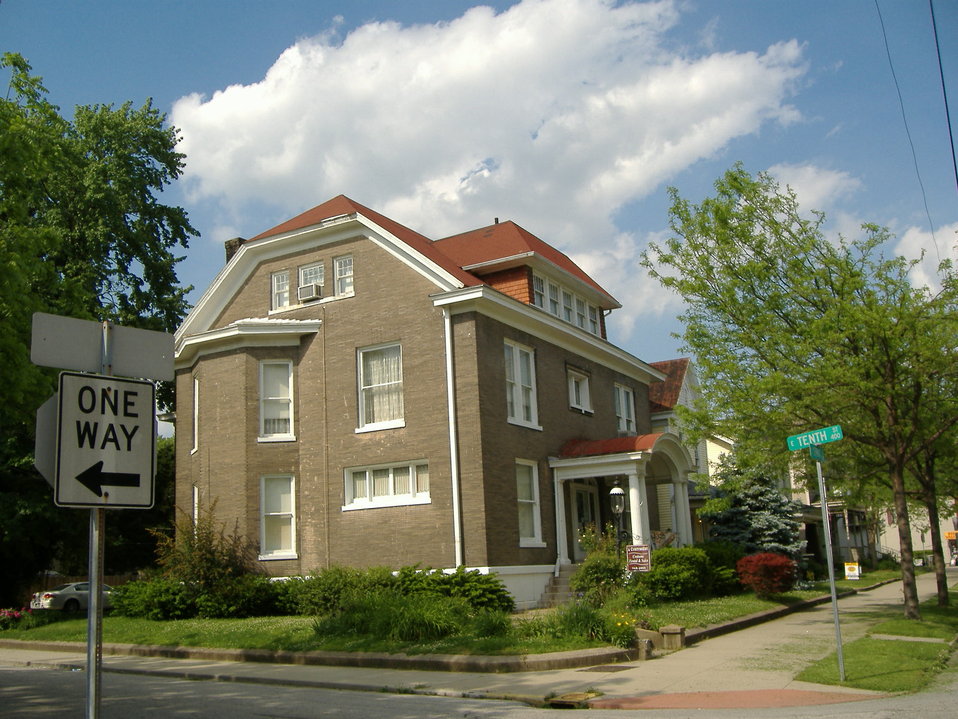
A c.1910 Colonial Revival home in the East Spring Street Historic District of New Albany.